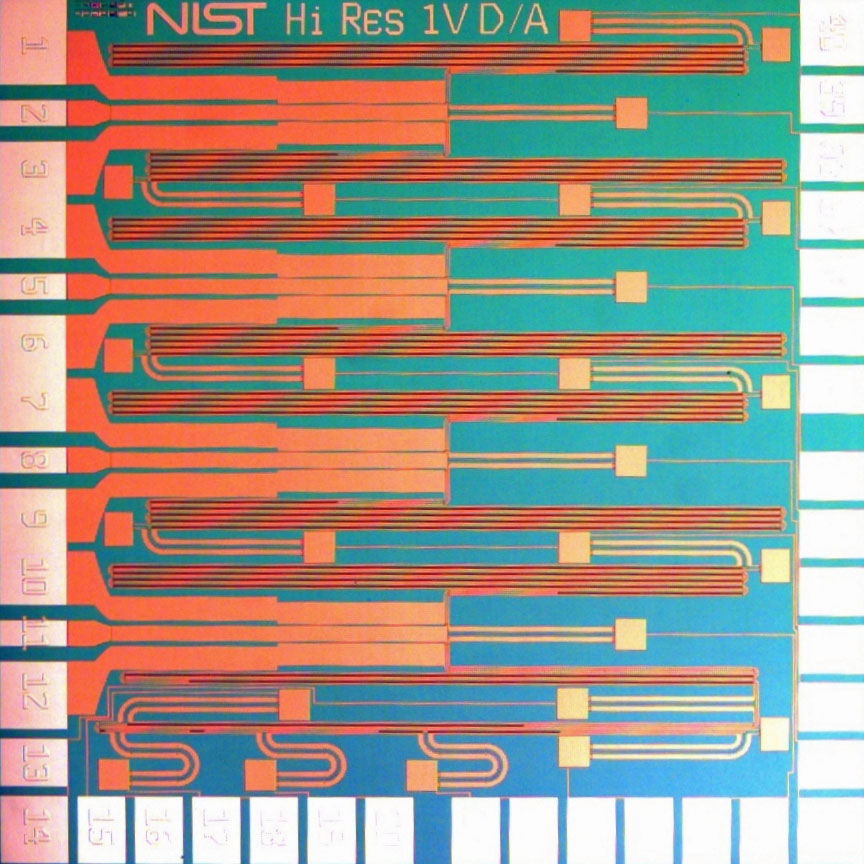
Advanced programmable standard chip

(2005) Advanced programmable standard chip
From the History of NIST Quantum Voltage Standards